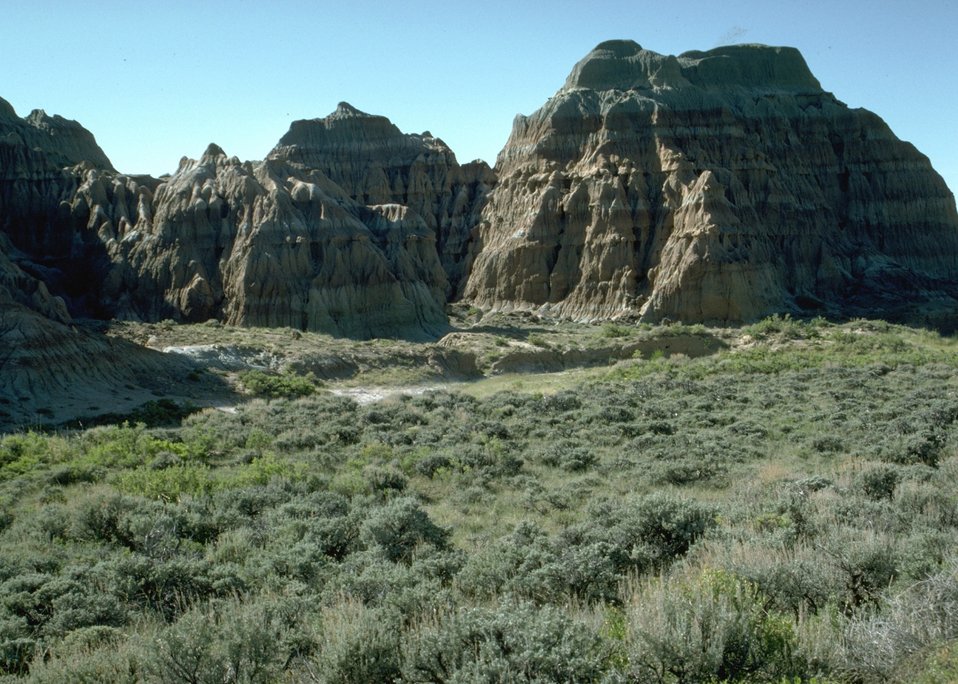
Honeycomb rock formation.